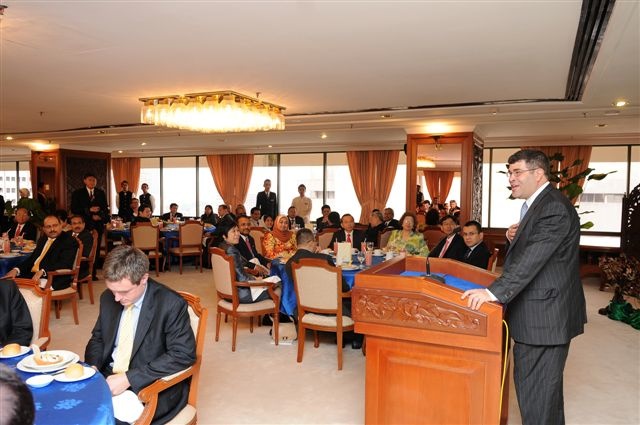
Deputy Secretary Wolin's Trip to the Pacific Rim

Deputy Secretary Neal Wolin makes brief remarks at a working lunch with leaders from Malaysia's financial sector in Kuala Lumpur.